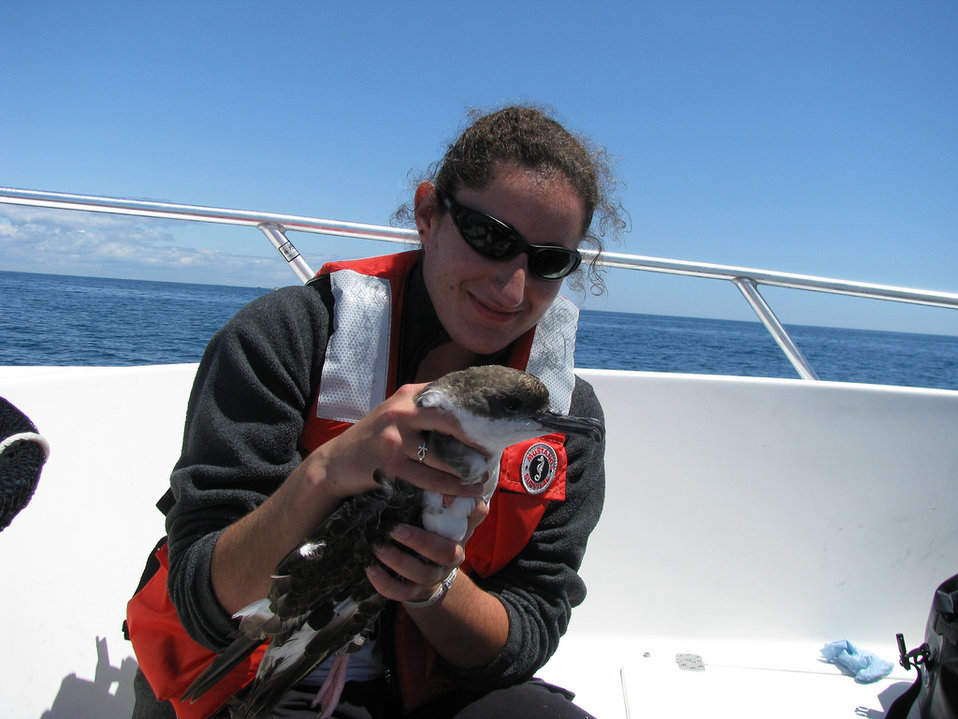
Tagging greater shearwater

U.S. Fish and Wildlife Service